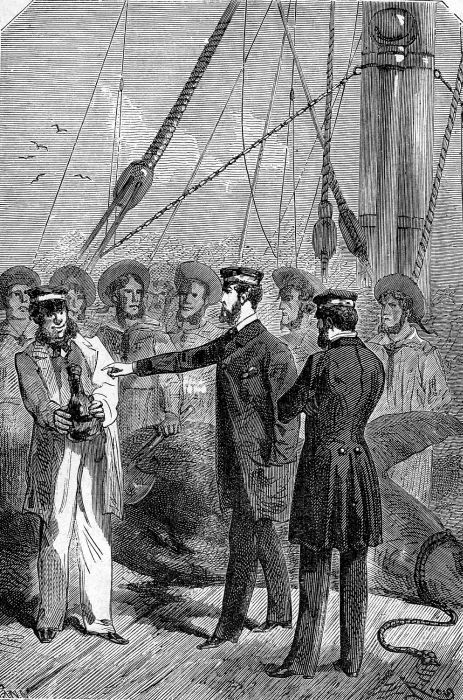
An ilustration from the novel 'In Search of the Castaways; or Captain Grant's Children' by Jules Verne drawn by Édouard Riou. Polski: Ilustracja powieści Juliusza Verne'a 'Dzieci kapitana Granta' autorstwa Édouarda Riou. Čeština: Původní ilustrace Édouarda Rioua k románu J. Verna 'Děti kapitána Granta'. Français : 'Les Enfants du capitaine Grant', Édouard Riou. Français : « Quoi ! s’écria Lord Glenarvan, c’est une bouteille que ce requin a dans l’estomac ! »